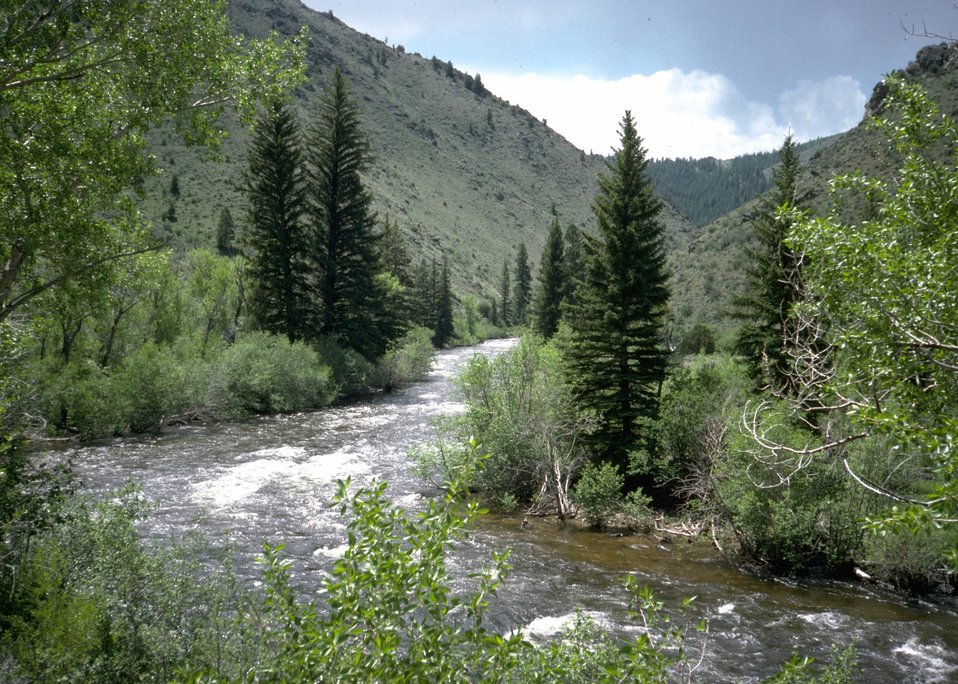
Scenic wilderness area.